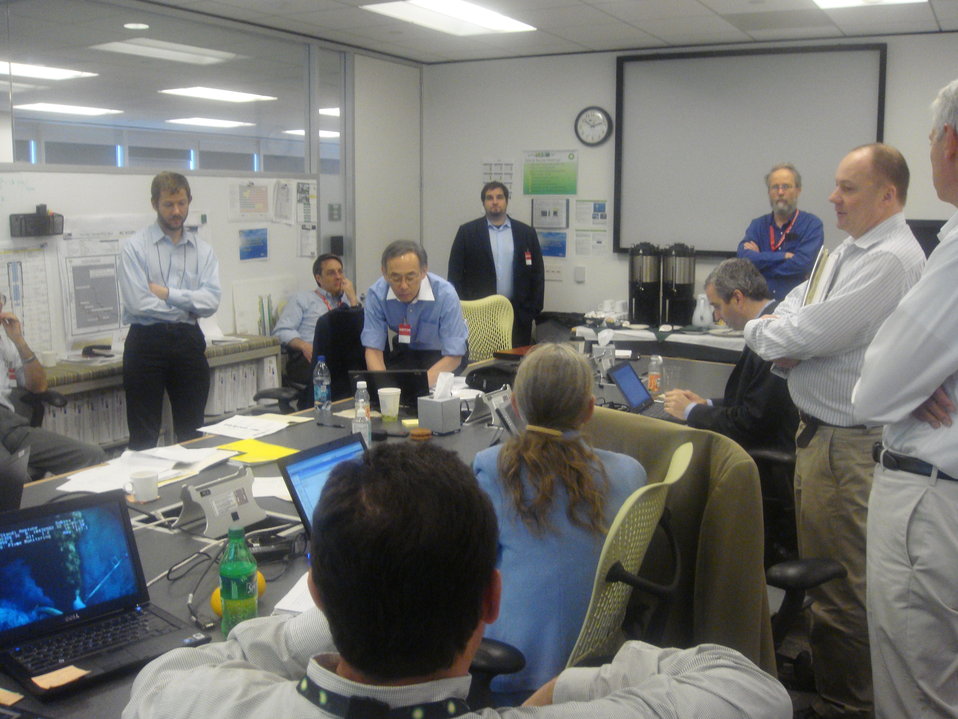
U.S. Energy Secretary Steven Chu confers with scientific experts and BP officials on the 'top kill' strategy